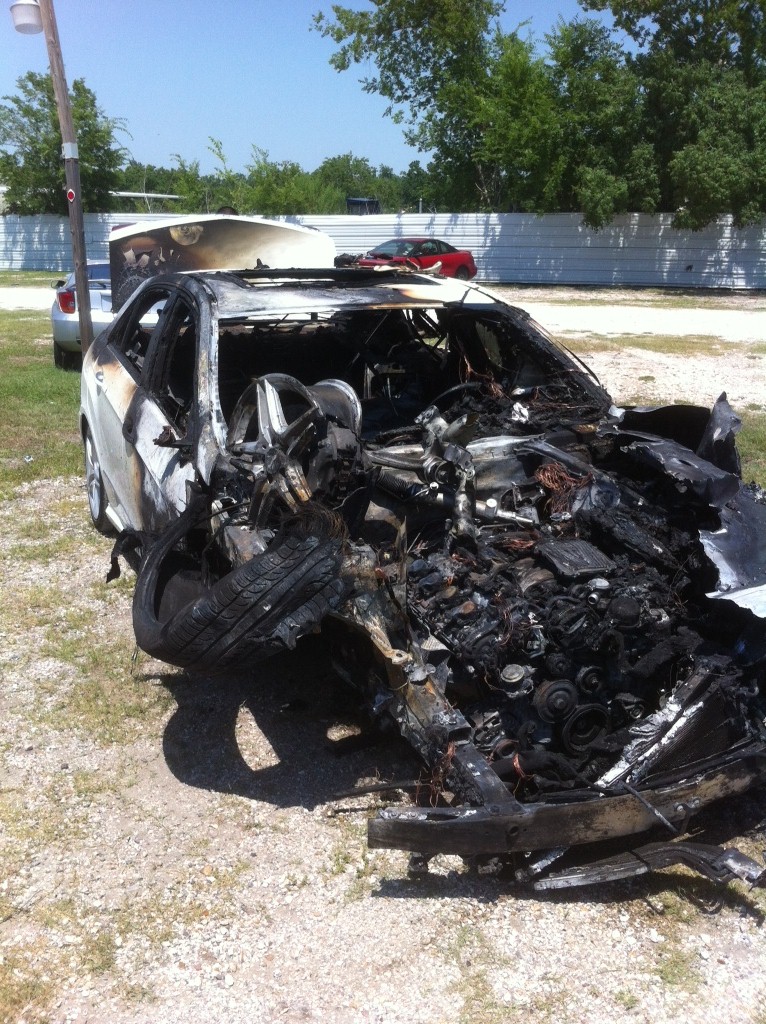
Burning car rescue

The remnants of Nancy Decker’s vehicle after it caught fire on the Sam Houston Parkway in Texas on June 1, 2012. Staff Sgt. Mitchell Corbin, an aerospace ground equipment technician with the Texas Air National Guard’s 147th Reconnaissance Wing, was able to pull Decker from the vehicle and away to safety.